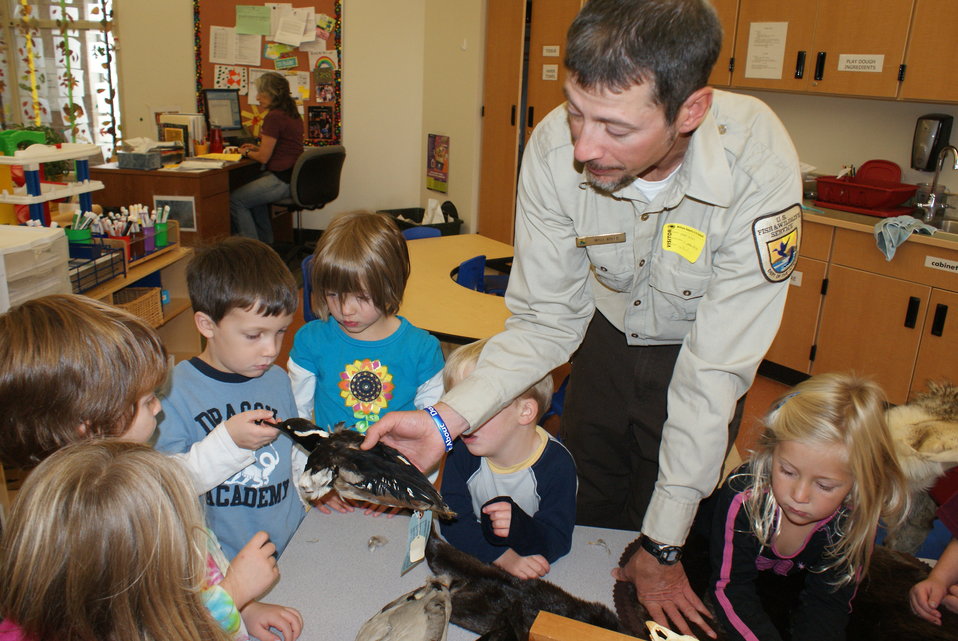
Scientists in the Community Program

U.S. Fish and Wildlife Service Mountain-Prairie Region Deputy ARD for External Affairs, Matt Kales, introduces early childhood education students at William Roberts Elementary School in Denver to some of Colorado's native and historic wildlife species.